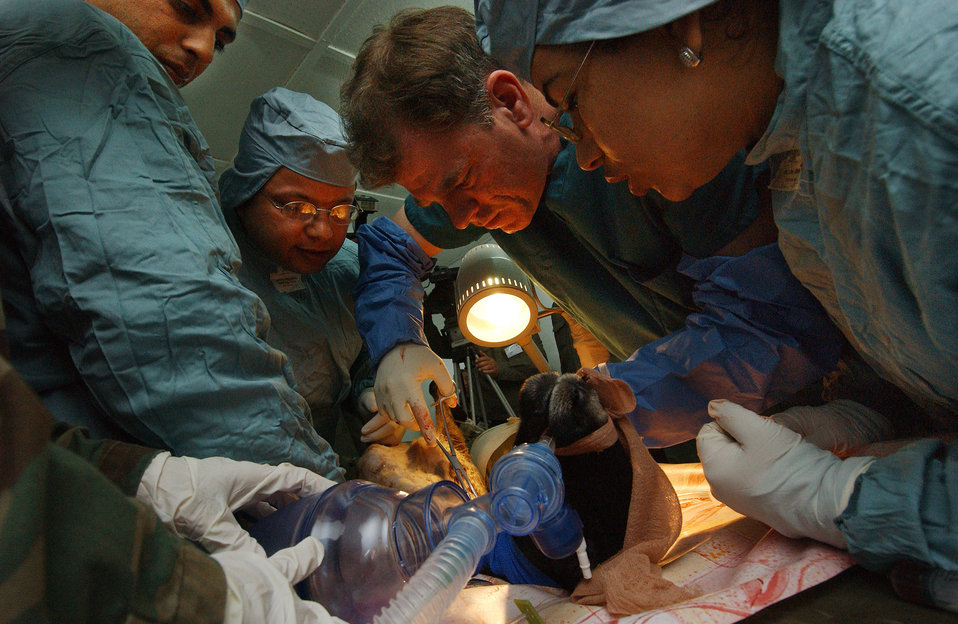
MEDLite 2006

Lt. Col. (Dr.) Richard Standaert, second from right, demonstrates surgical procedures for Tunisian military physicians during the animal surgical lab portion of Exercise MEDLite 2006 at Kharrouba Air Base, Tunisia, on Saturday, April 1, 2006. MEDLite 2006 provides the opportunity for Air Force medical specialists to exchange medical skills, techniques and procedures with Tunisian military medical personnel.